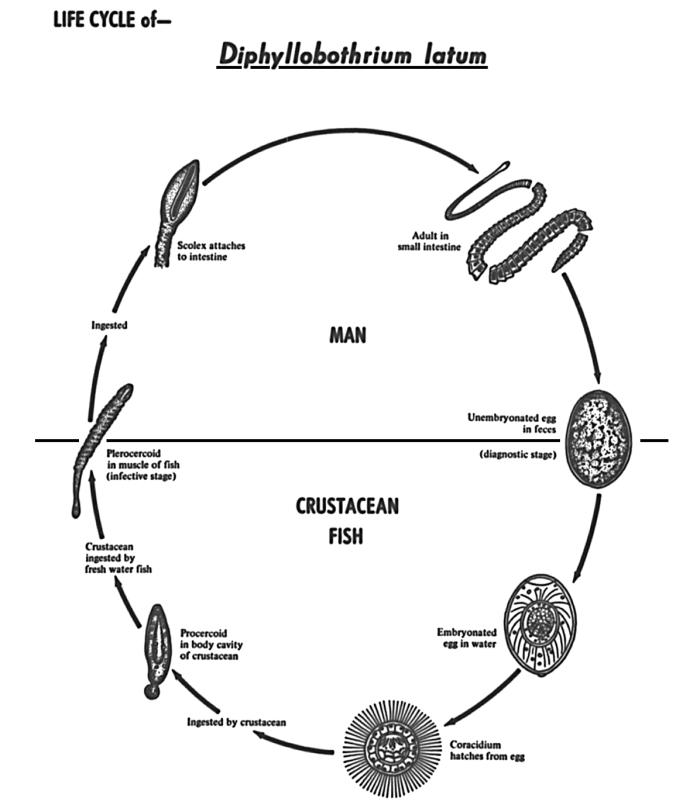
This diagram depicts the various stages in the life cycle of the tapeworm Diphyllobothrium latum, a cestode.